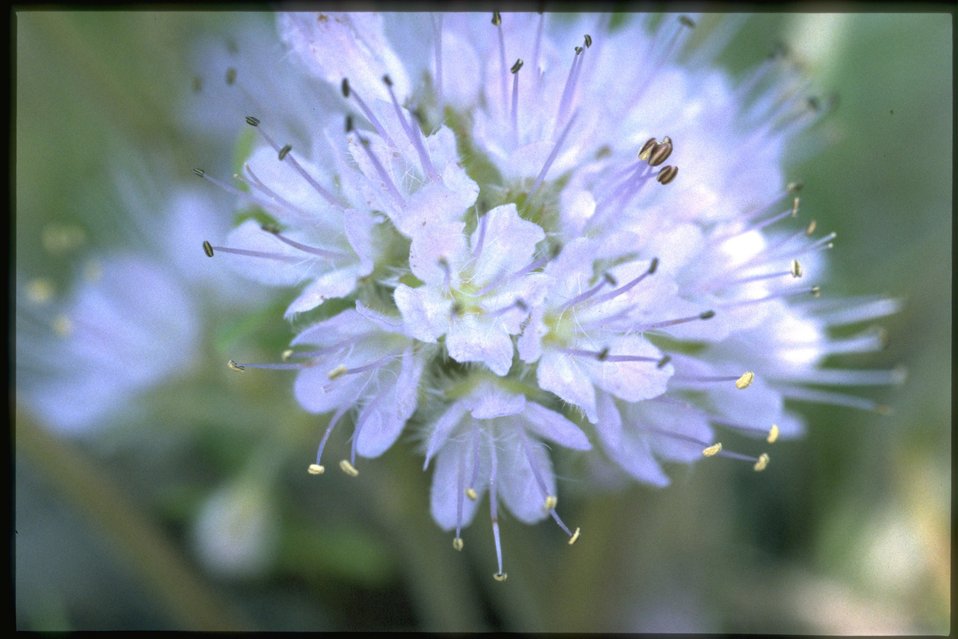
Closeup shot of Dwarf Waterleaf, Hyderophyllum Capitatum, wildflower.